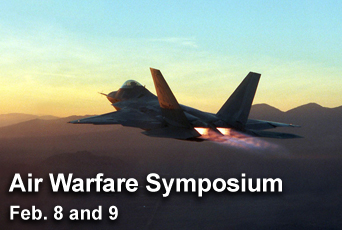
AFA announces annual symposium

The 23rd Annual Air Warfare Symposium is scheduled for Feb. 8 and 9 in Orlando, Fla., with a theme for this year's symposioum of